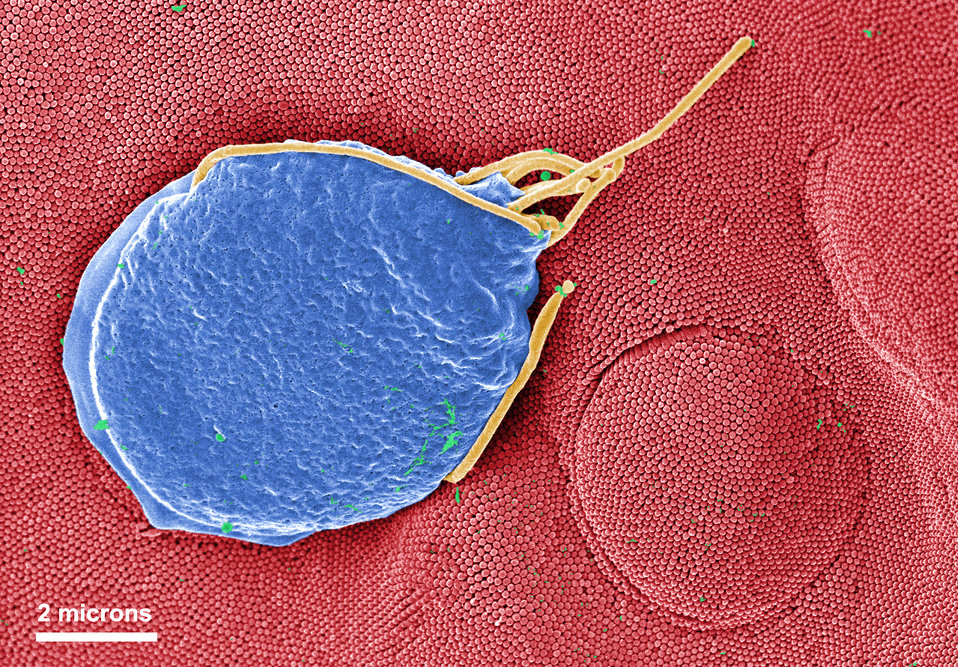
This digitally-colorized scanning electron micrograph (SEM) depicted a Giardia muris protozoan adhering itself to the microvillous border of an intestinal epithelial cell. Each small circular profile under the protozoan represents the rounded tip of a single microvillous, and it is estimated that 2000 to 3000 microvilli cover the surface of a single intestinal epithelial cell. The two circular lesions on the right side of the photograph are impressions made by the ventral adhesive disk of other G. muris organisms. This disk acts like a suction cup, facilitating the organism's attachment to the intestinal surface.